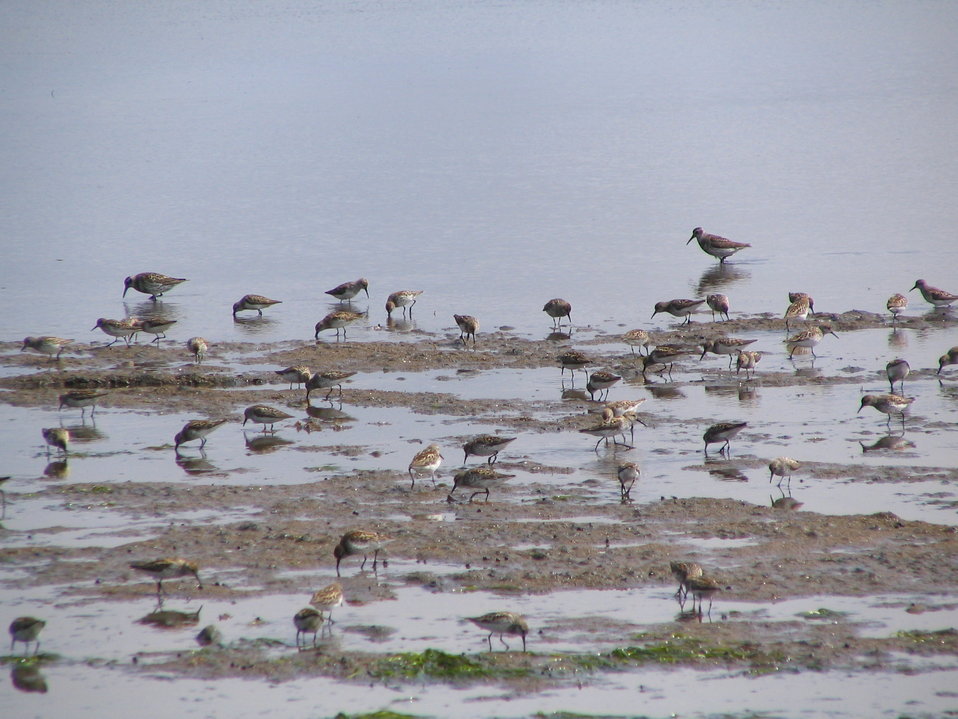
Western sandpipers and a few Rock sandpipers, Kinzarof Lagoon, Izembek National Wildlife Refuge